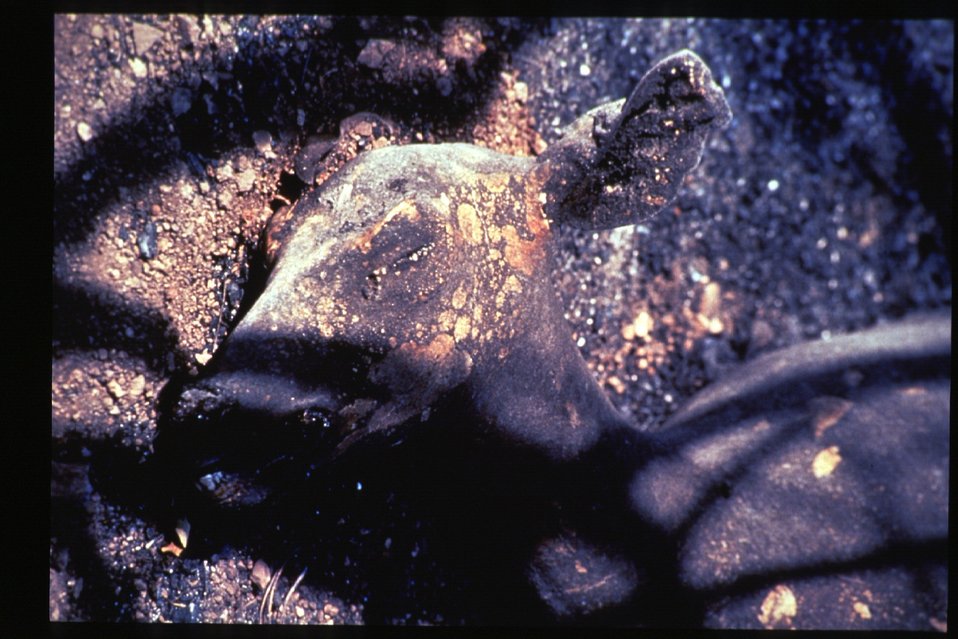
Boise Foothills Fire Danskin Mountains and South Fork of Boise River Burnt deer Four River Field Office LSRD Lower Snake River District